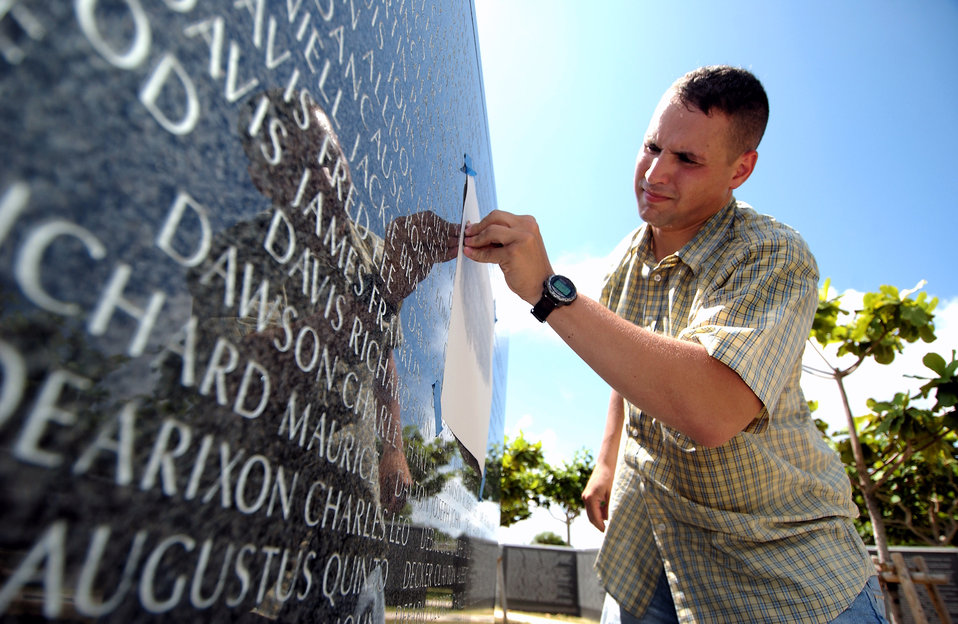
The Battle of Okinawa memorial

Tech. Sgt. Victor Follis does a pencil rubbing July 15 of the name of a servicemember who died in the Battle of Okinawa. Sergeant Follis does the rubbings to help family members to remain connected to their loved ones who died in the battle more than 60 years ago. The memorial is located in Peace Prayer Park in Itoman City, Japan. Sergeant Follis is with the 18th Maintenance Group at Kadena Air Base, Japan.